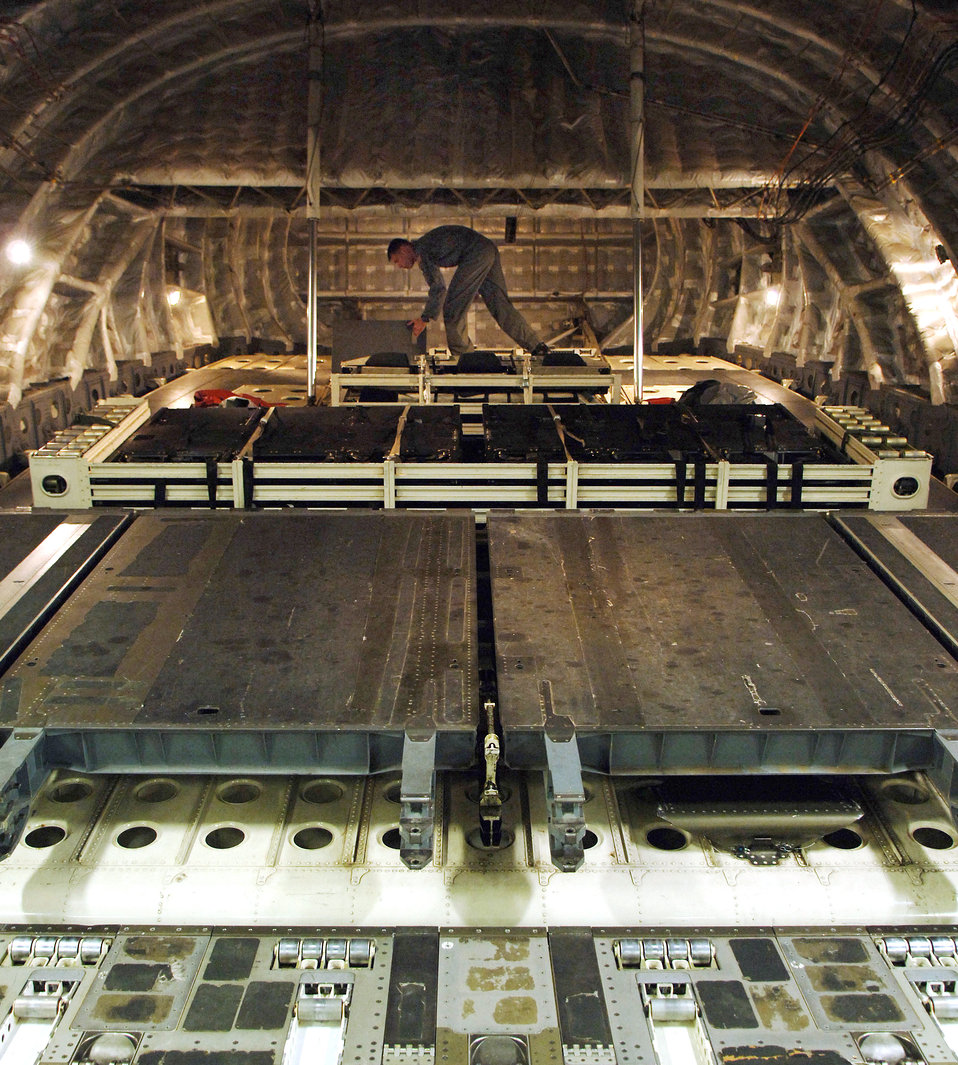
Loadmaster

Airman 1st Class Derrick Maloney checks the pins on the cargo door on a C-17 Globemaster III prior to a training mission Oct. 26 at Charleston Air Force Base, S.C. Airman Maloney is a loadmaster with the 17th Airlift Squadron.